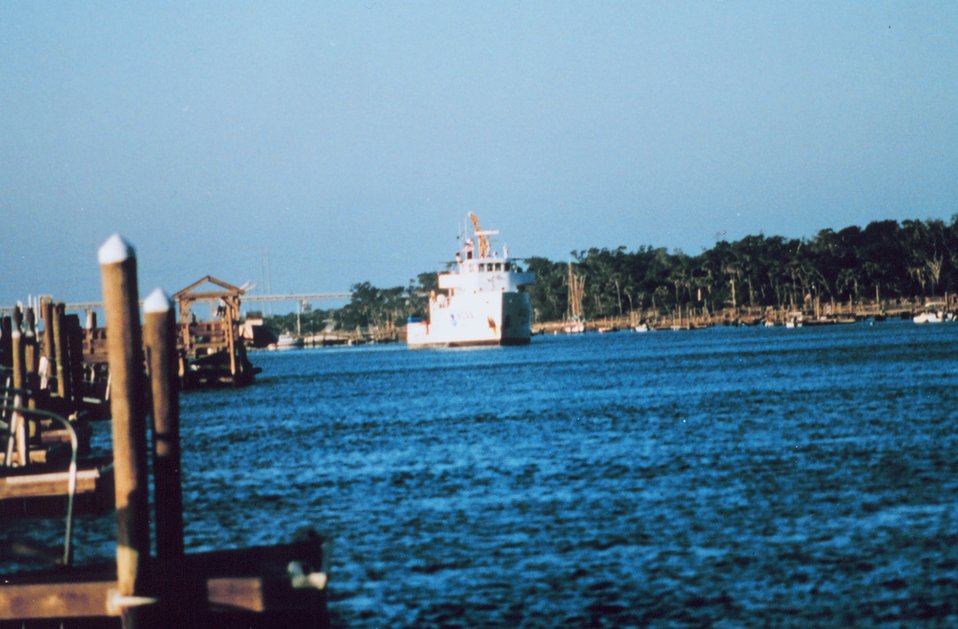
NOAA Ship FERREL in Intracoastal Waterway north of Charleston